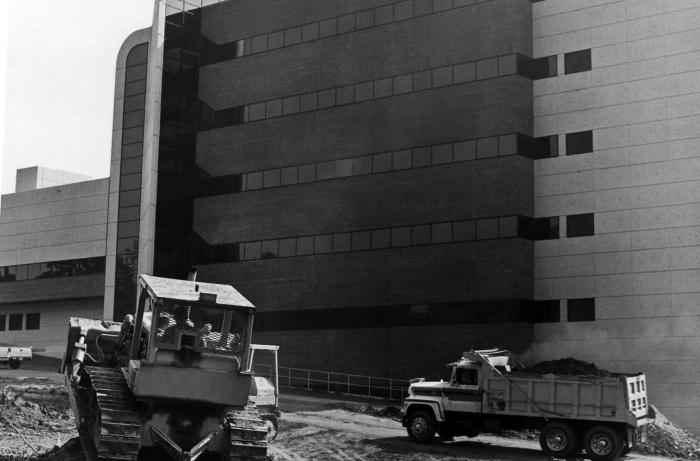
This late 1980s photograph showed the construction, which was taking place outside of what would become the Centers for Disease Control's, Building 15 on the Roybal Campus located in Atlanta, Georgia.